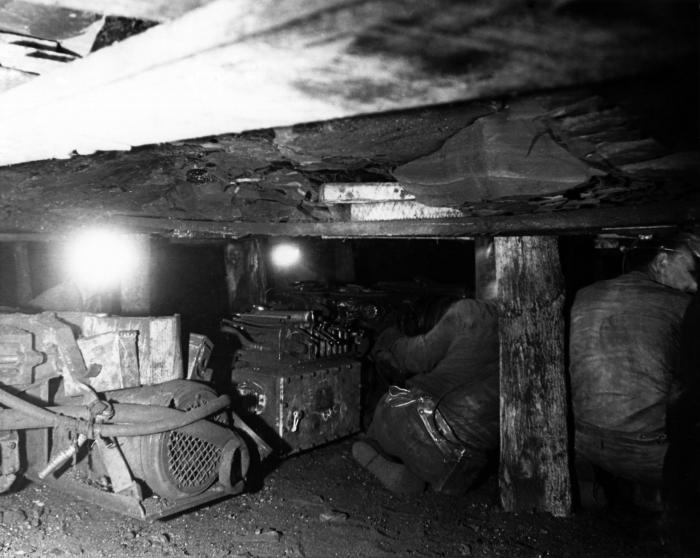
From the 1950s or 1960s, this historic image provided by the Center for Disease Control's (CDC), National Institute for Occupational Safety and Health (NIOSH), depicted two coal miners who were shown crouched down low in the small confines of a coal mine. Though not definitive due to the view, it appeared that the miner on the far right was not wearing what would now be considered as an appropriate filtered breathing device. Mining coal, especially under circumstances such as these close quarters, facilitated coal dust inhalation, thereby, predisposing miners to the long-term negative health effects of this profession such as 'black lung disease', or 'coal-workers' pneumoconiosis' (CWP). Today, the Federal government's stringent regulations on the level of coal dust permissible in the air of a coal mine, and the requisite use of filtered breathing devices, has dramatically lowered the number of cases of black lung disease. See PHIL 9541 for another view of this scene.